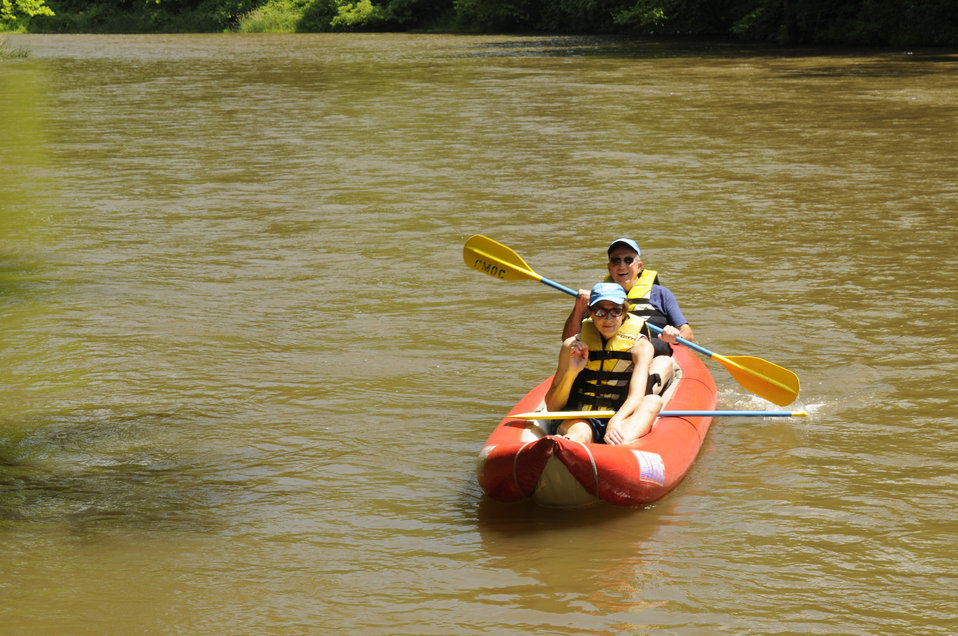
A visitor to a National Forest in North Carolina enjoys hiking through the wilderness on June 23, 2009. National Forests offer visitors access to a diversity of outdoor recreational opportunities such as hiking, biking, riding horses, driving off-highway vehicles, picnicking, camping, hunting, fishing, rock climbing, and navigating waterways. Visitors can view wildlife, scenic vistas, and explore historic places.